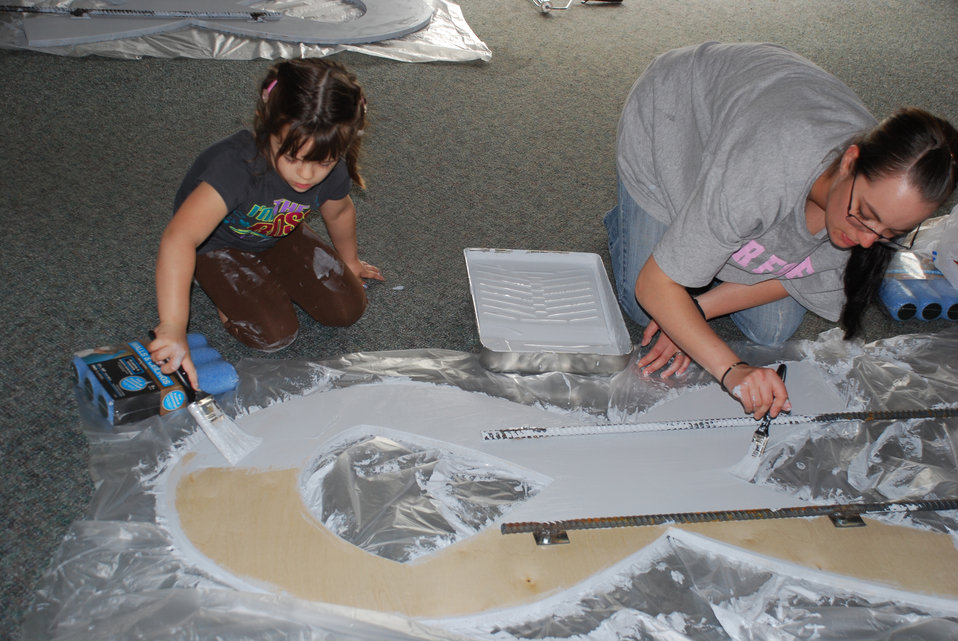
SARC creates first SASH program in AF

Kristin Gallego (left), 4-year-old volunteer, and Airman Katherine McKenna, a 383rd Training Squadron Airman in Training at Sheppard Air Force Base, Texas, paint gray primer on a giant ribbon March 27, 2010, that symbolizes Sexual Assault Awareness Month. The ribbons later were painted teal and displayed at each of the gates on Sheppard AFB.